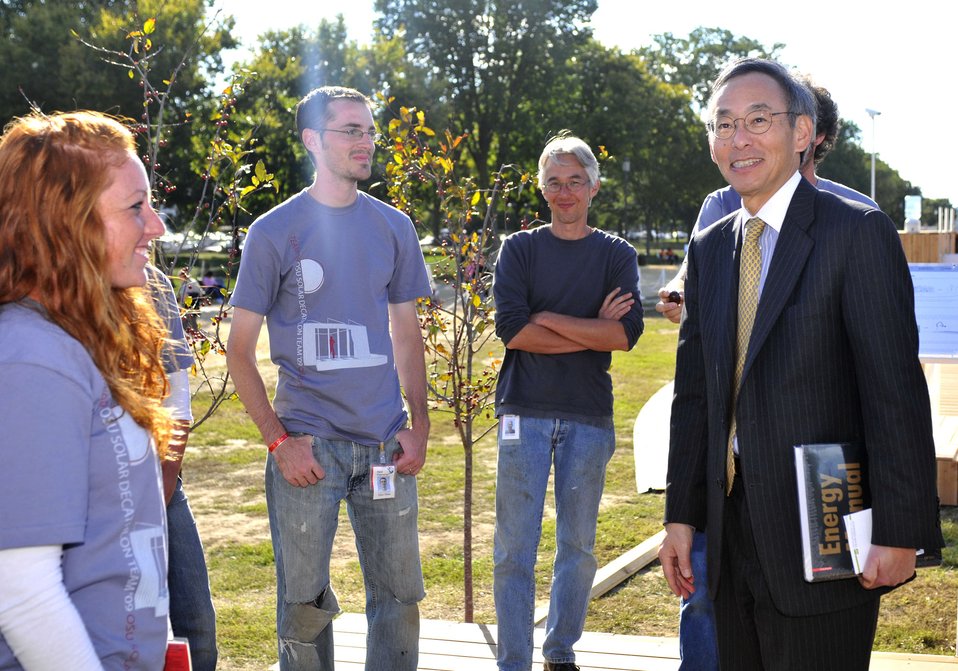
Solar Decathlon 2009 on the National Mall, with Sec. Chu

Solar Decathlon 09